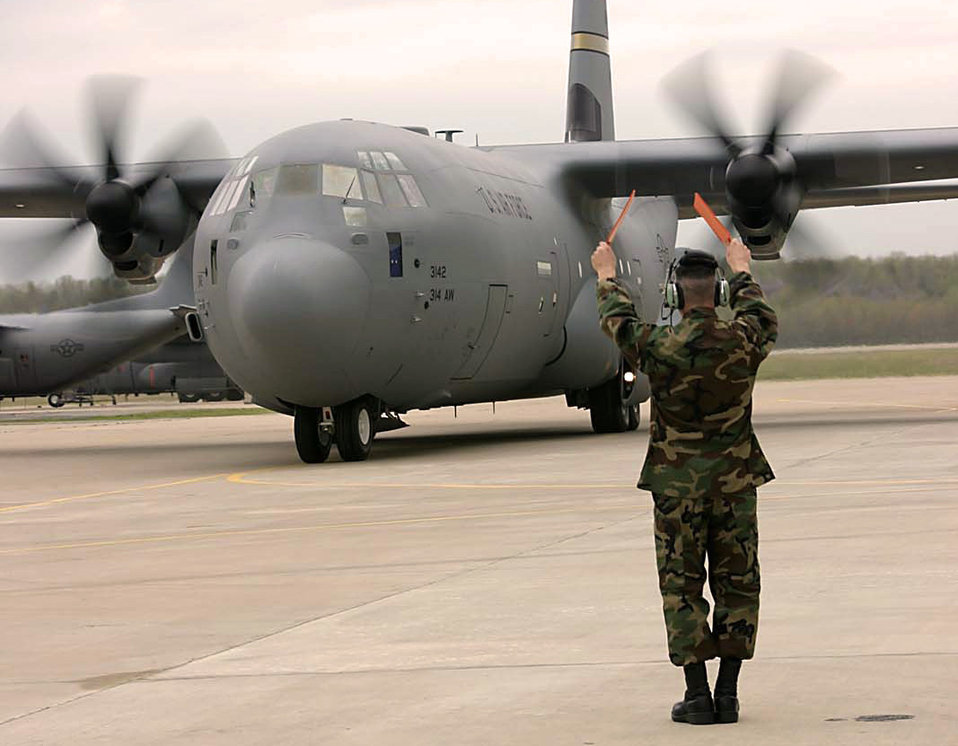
Little Rock receives second C-130J

LITTLE ROCK AIR FORCE BASE, Ark. -- Tech. Sgt. Jonathan Rebidue marshals in the Air Force's second active-duty J-model C-130 Hercules here April 5. Sergeant Rebidue is a C-130 dedicated crew chief.